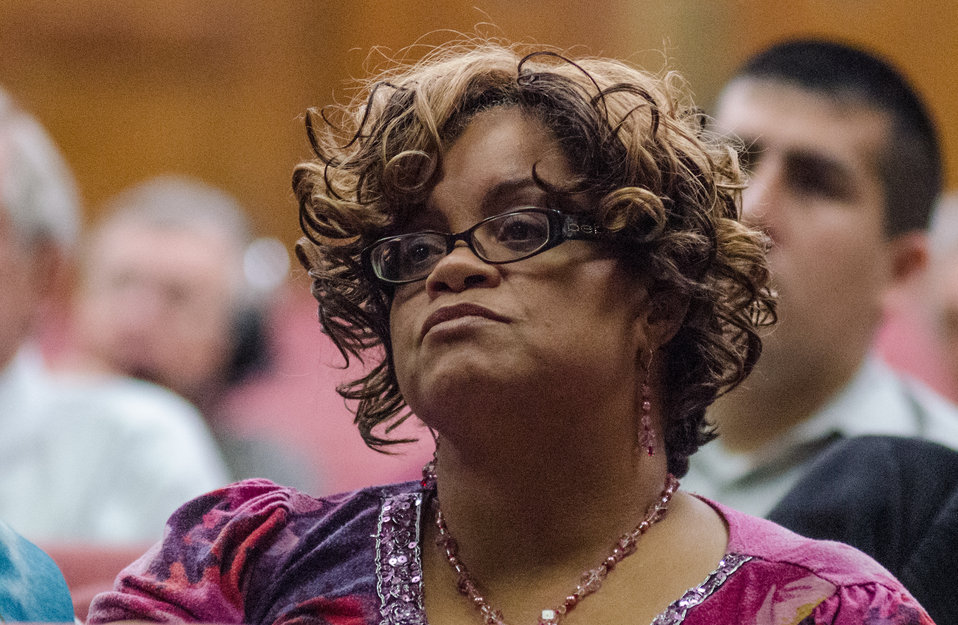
A U.S. Department of Agriculture (USDA) employee USDA Rural Development (RD) Deputy Under Secretary Patrice Kunech remarks during USDA’s Rural Development (RD) 2nd Annual Cultural Transformation kickoff opening ceremony and forums, themed “Employees Influencing Change,” on Tuesday, Aug. 13, 2013 USDA in Washington, D.C.